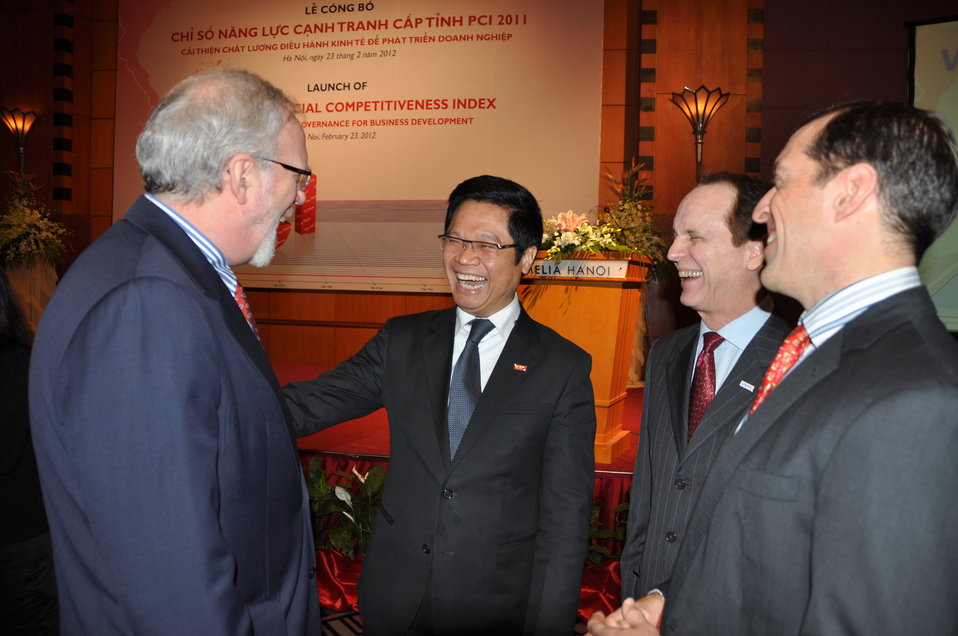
Provincial Competitiveness Index 2011 Launch